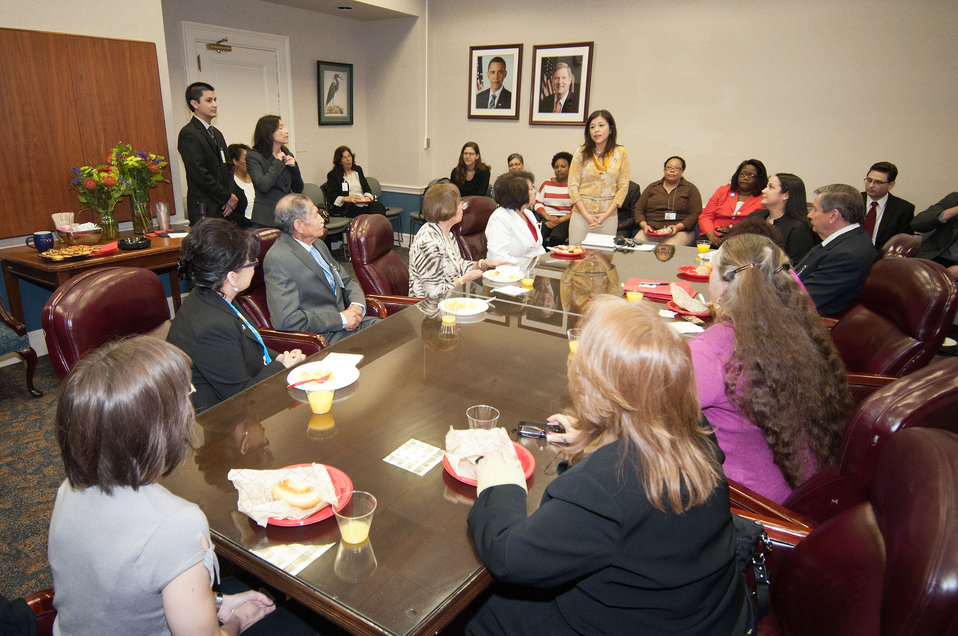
Christine Chavez, Office of Advocacy and Outreach welcomes to the 2012 White House Champions of Change during a Breakfast Reception sponsored by the Office of Advocacy and Outreach and Office of the Assistant Secretary for Civil Rights at the United States Department of Department of Agriculture In Washington, D.C., Thursday, March 29, 2012. They were being recognized for their leadership, community service and service to others prior to being honored at the White House in Honor of Cesar Chavez Day. Chavez was a Mexican-American labor leader who used non-violent methods to fight for the rights of migrant farm workers in the southwestern United States. Chavez founded the Cesar Chavez Foundation, a group that advocates for the rights of farm workers, acting to increase wages and improve the working conditions and safety of farm workers. USDA Photo by
Bob Nichols.